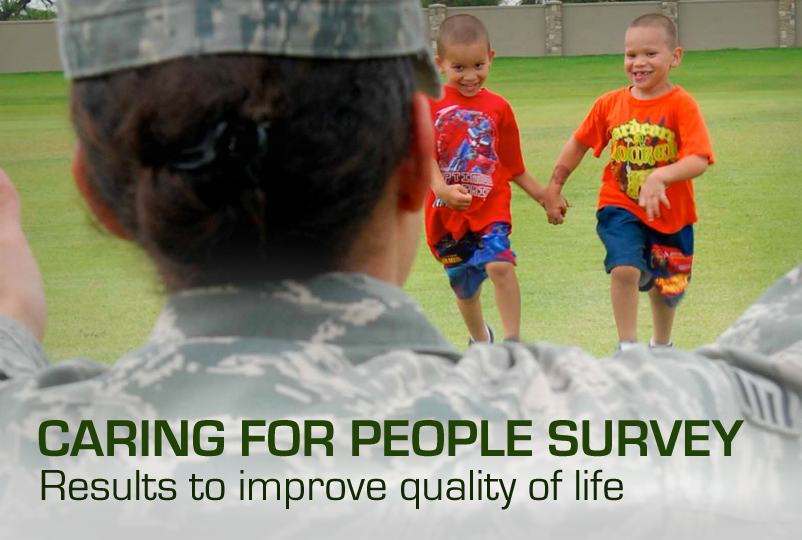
Caring for people survey